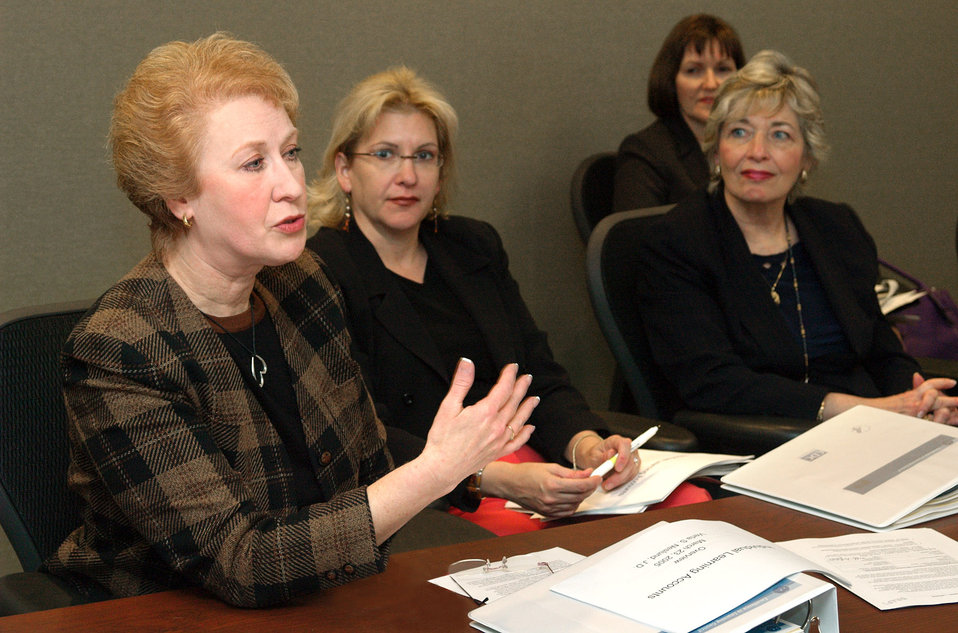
This photograph showed from left to right, VP for Programs, CDC Foundation, Verla Neslund as she was presenting details of individual learning accounts to the CDC's Excellence in Learning Council (ELC). Other members present were (from left) Dir. of the Div. of Emergency Preparedness and Response, Lynn Steel; Sr. Service Fellow, Joan Cioffi; Health Education Specialist, Deborah Gould (background).